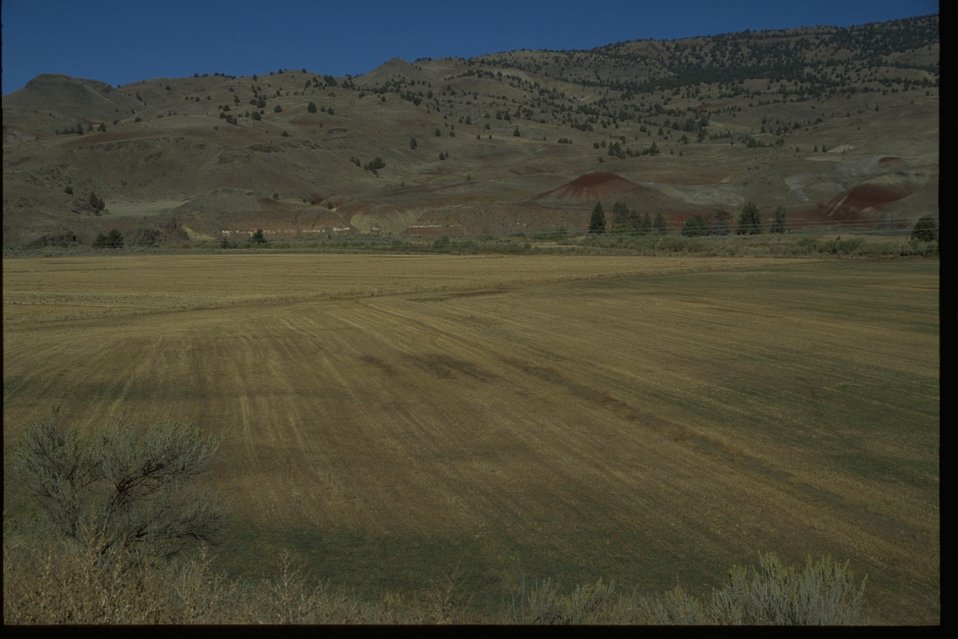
Bridge Creek Agricultural fields.